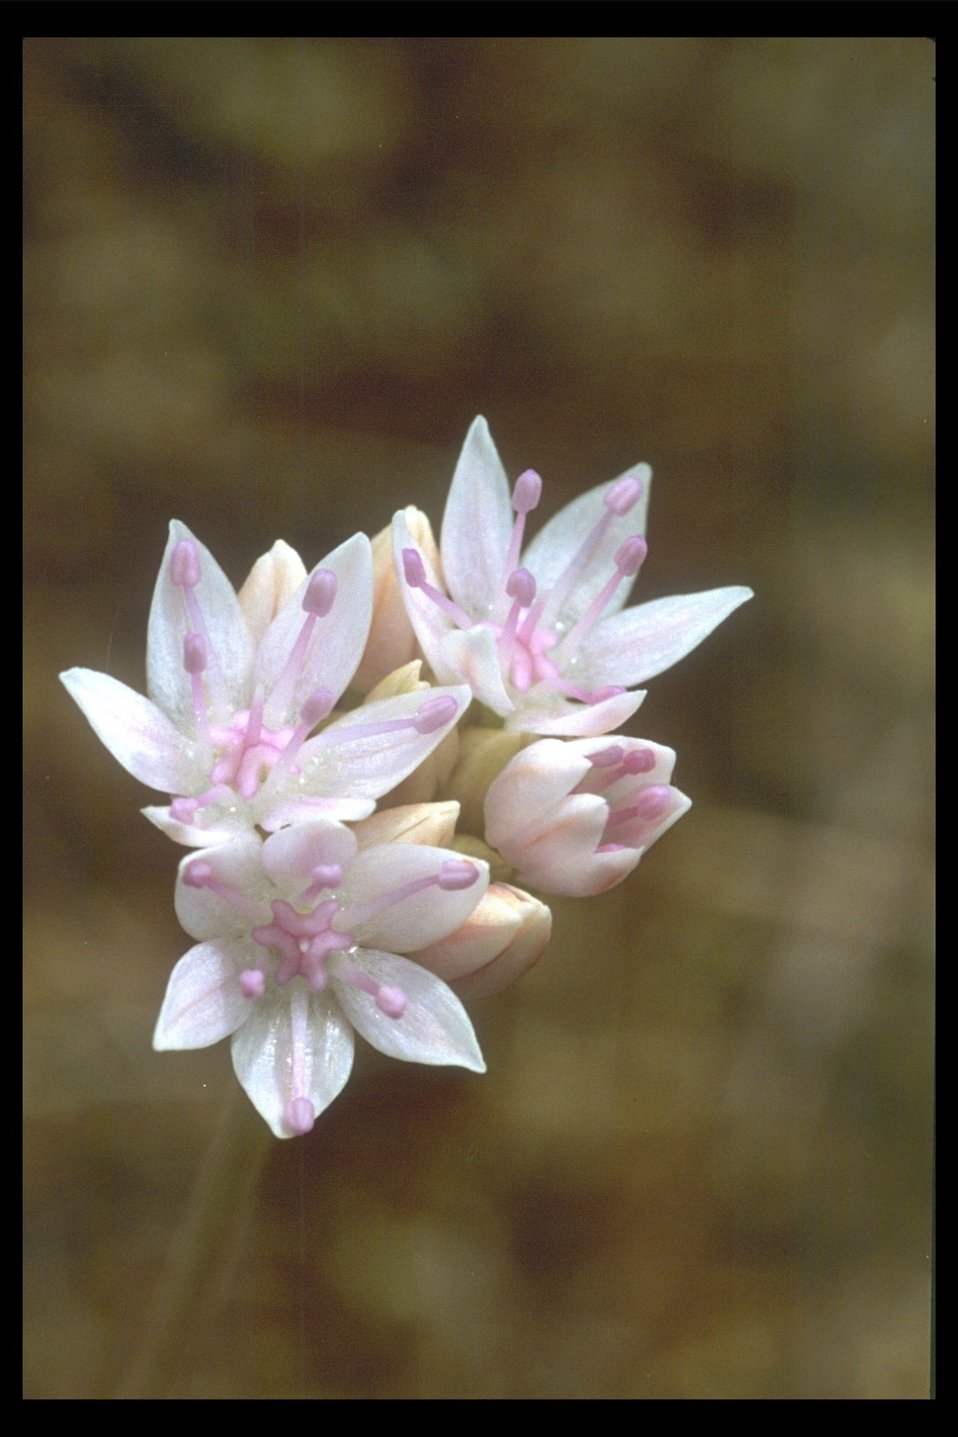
Wild Onion (Allium sp.) found on the Upper Table Rock.